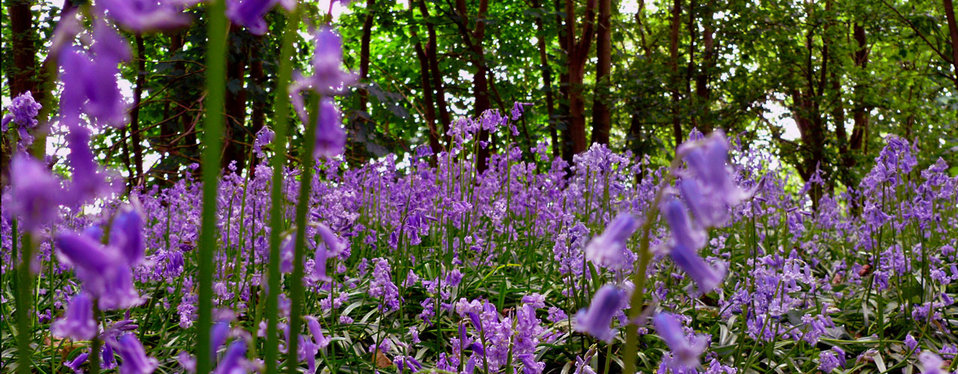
Bluebell flowers

Bluebells panoramatic picture.